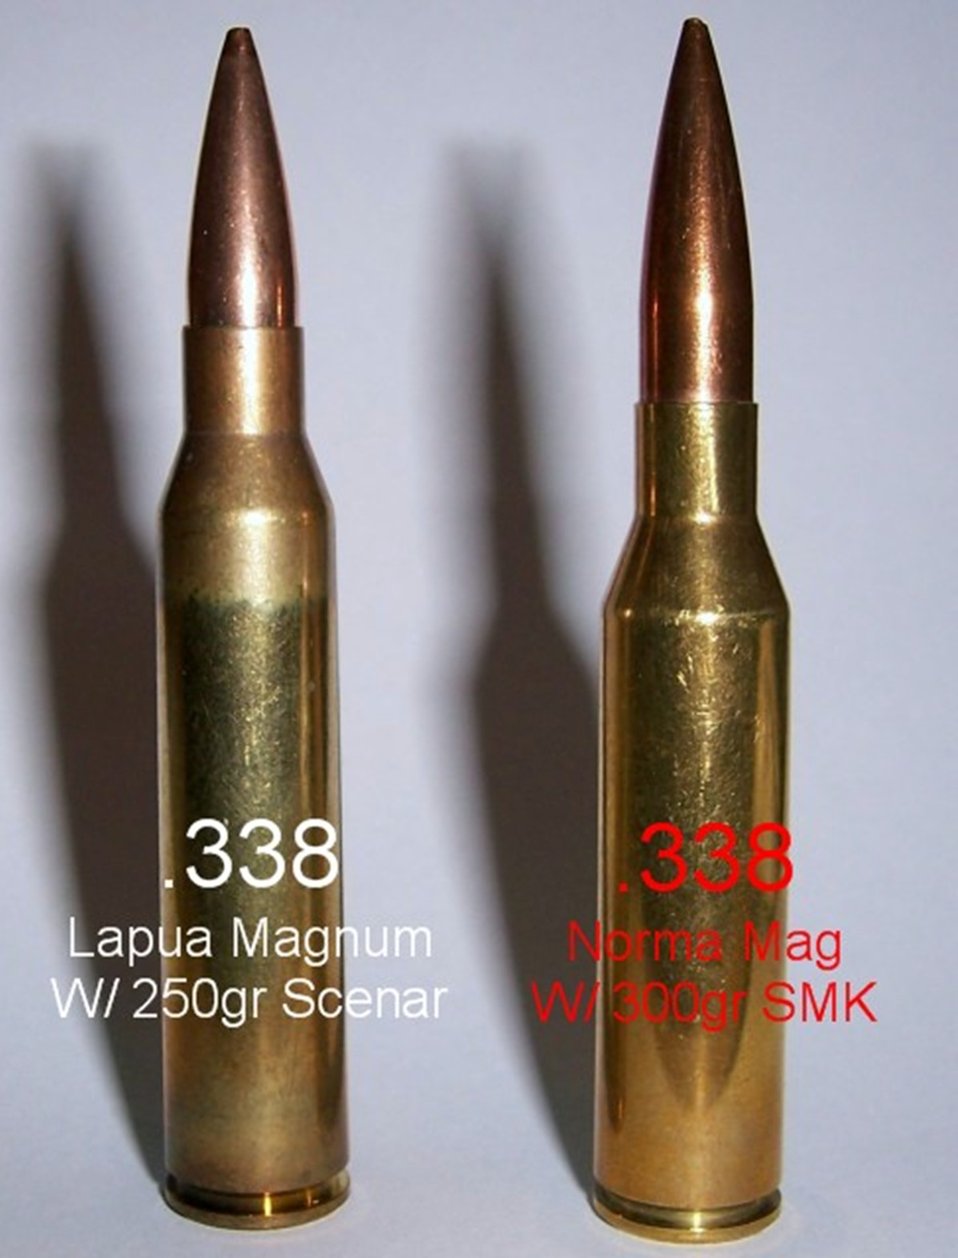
This image is a side by side comparison of the .338 Lapua Magnum cartridge to the .338 Norma Magnum cartridge.